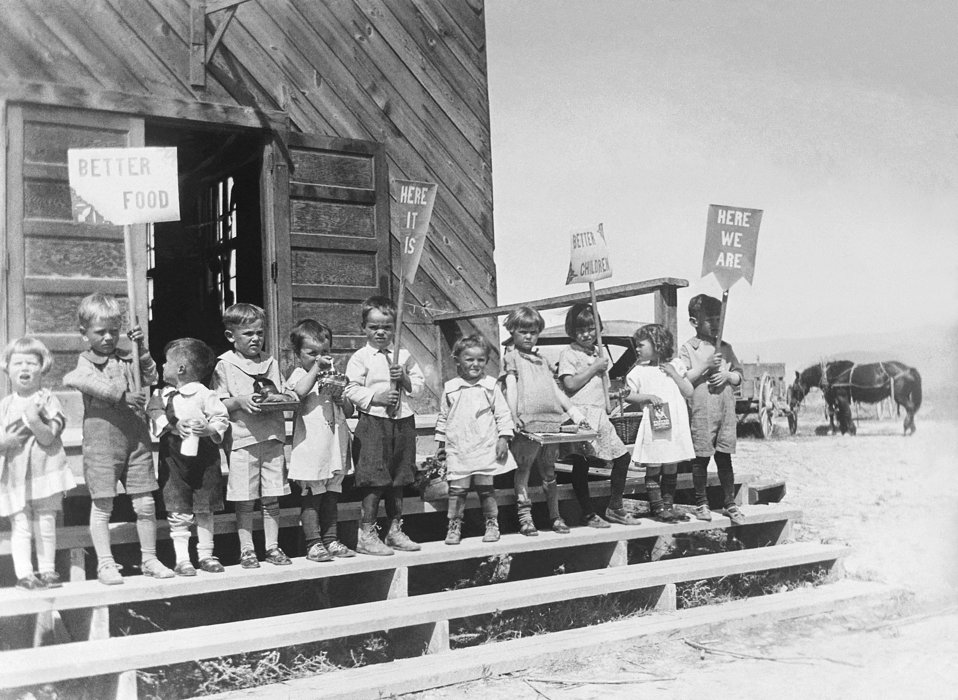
This historic photograph showed a group of children who had gathered in an observance of 'Child Health Day', displaying signs with attention being paid to nutrition. Left to right, the signs read, 'Better Food' - 'Here It Is' - 'Better Children' - 'Here We Are.' Those children not holding signs were holding plates of food. Foods displayed represented examples of those that are high in nutritional value. The messages emphasized the importance of nutritious food to a child's healthy development, as well as the marketing efforts put forth by public health workers to promote practices that would benefit America's children. This event took place in the state of Montana. The original image was scanned from a glass lantern slide donated by the Minnesota Department of Health, and is one of a historical collection of documents and photographs devoted to observances of Child Health Day in the United States.